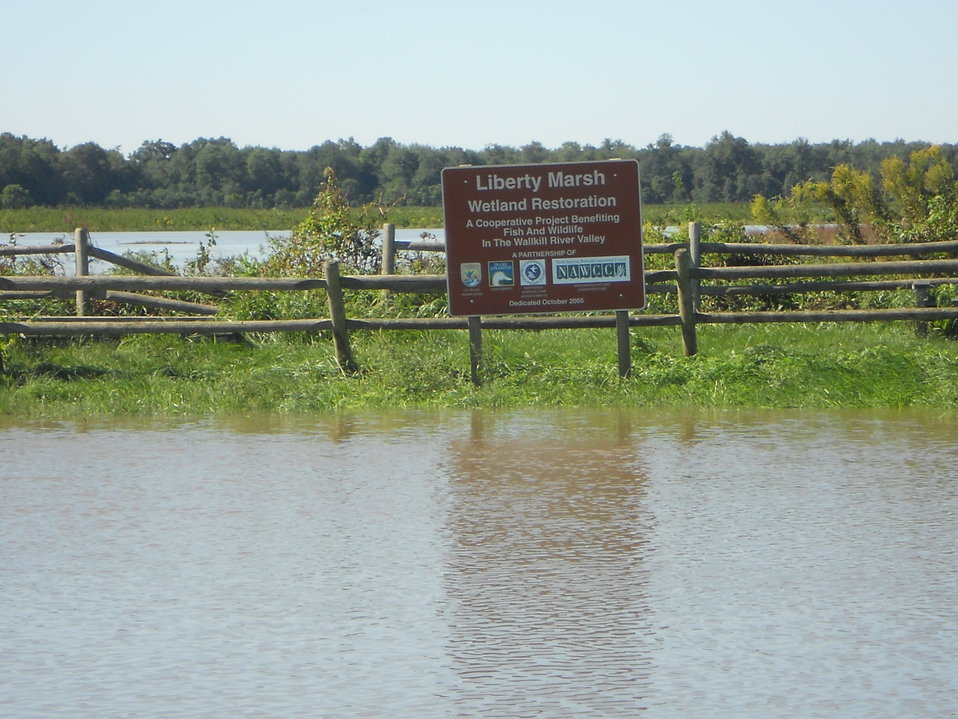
Hurricane Damage at Wallkill River National Wildlife Refuge August 30, 2011

Flooding at Liberty Loop Trail and impoundments, Sussex, NJ.